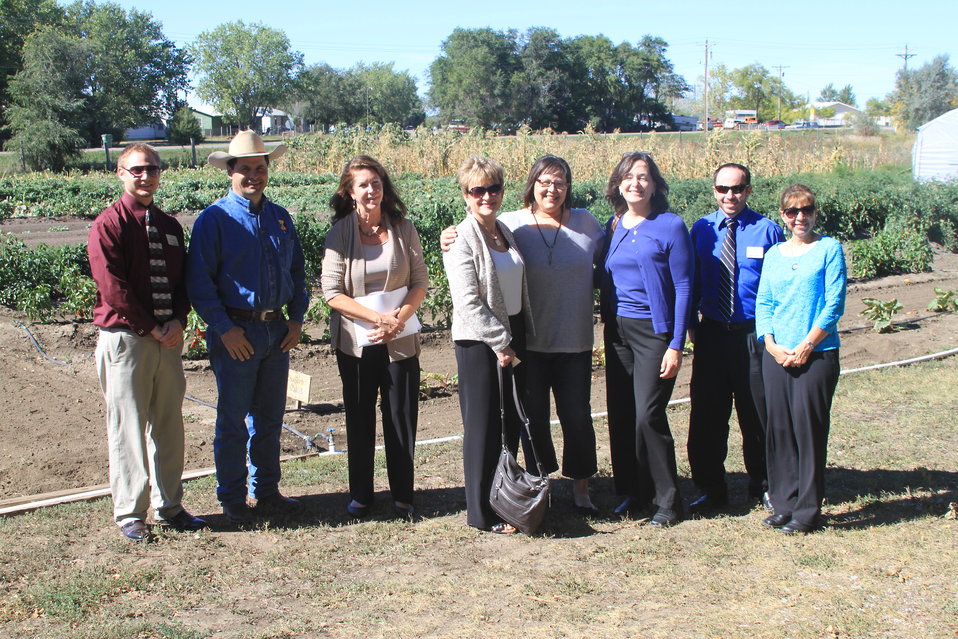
Left to right; Rob Ingalls, SD Department of Education Child and Adult Nutrition Services, Zach Ducheneaux, Program Director for the Intertribal Agriculture Council’s Technical Assistance Program, Darlene Barnes, Mountain Plain Regional Administrator, U.S. Department of Agriculture (USDA) Food and Nutrition Service (FNS), USDA, Deputy Under Secretary for FNS Janey Thornton, Julie Garreau, Executive Director of Cheyenne River Youth Project, Leslie Wheelock, Director of the USDA Office of Tribal Relations, Jason Person, , SD Department of Education Child and Adult Nutrition Services and Darlene Sanchez, Regional Division Director at Food and Nutrition Service in front of the massive garden that is planted and cared for by many volunteers that come and help the Cheyenne River Youth Center throughout the summer. Many garden items are sold at the farmers market or canned and sold in their gift store inside the Center on the Cheyenne River Indian Reservation, SD, on Tuesday, Sept. 24, 2013.